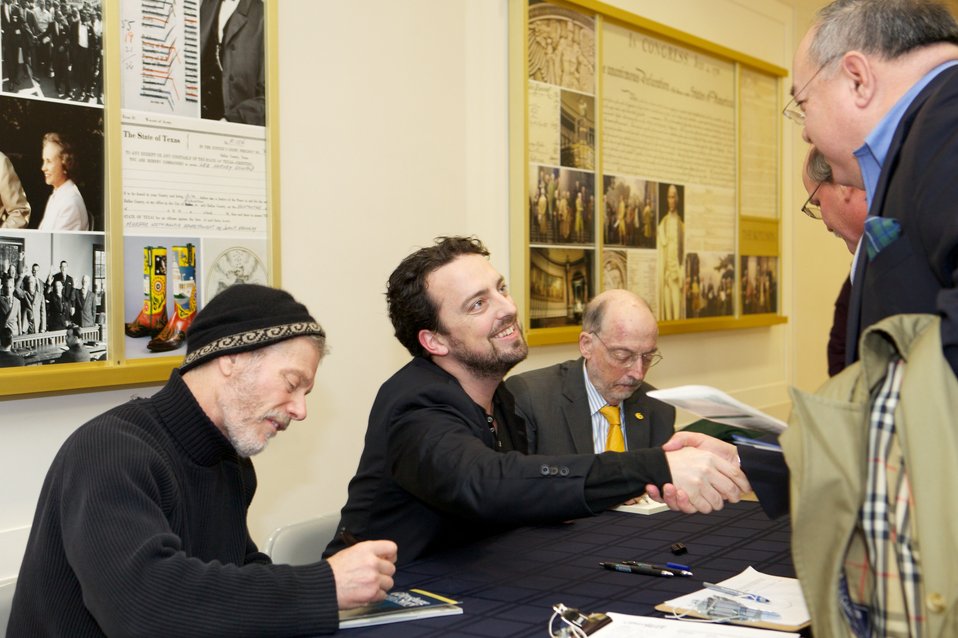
The Gettysburg Story and The Wheatfiled; Stephen Lang (left), actor and playwright, Jake Boritt (middle), filmmaker, and Gabor S. Boritt (right), Lincoln and Civil War era scholar, give autographs and talk with the public